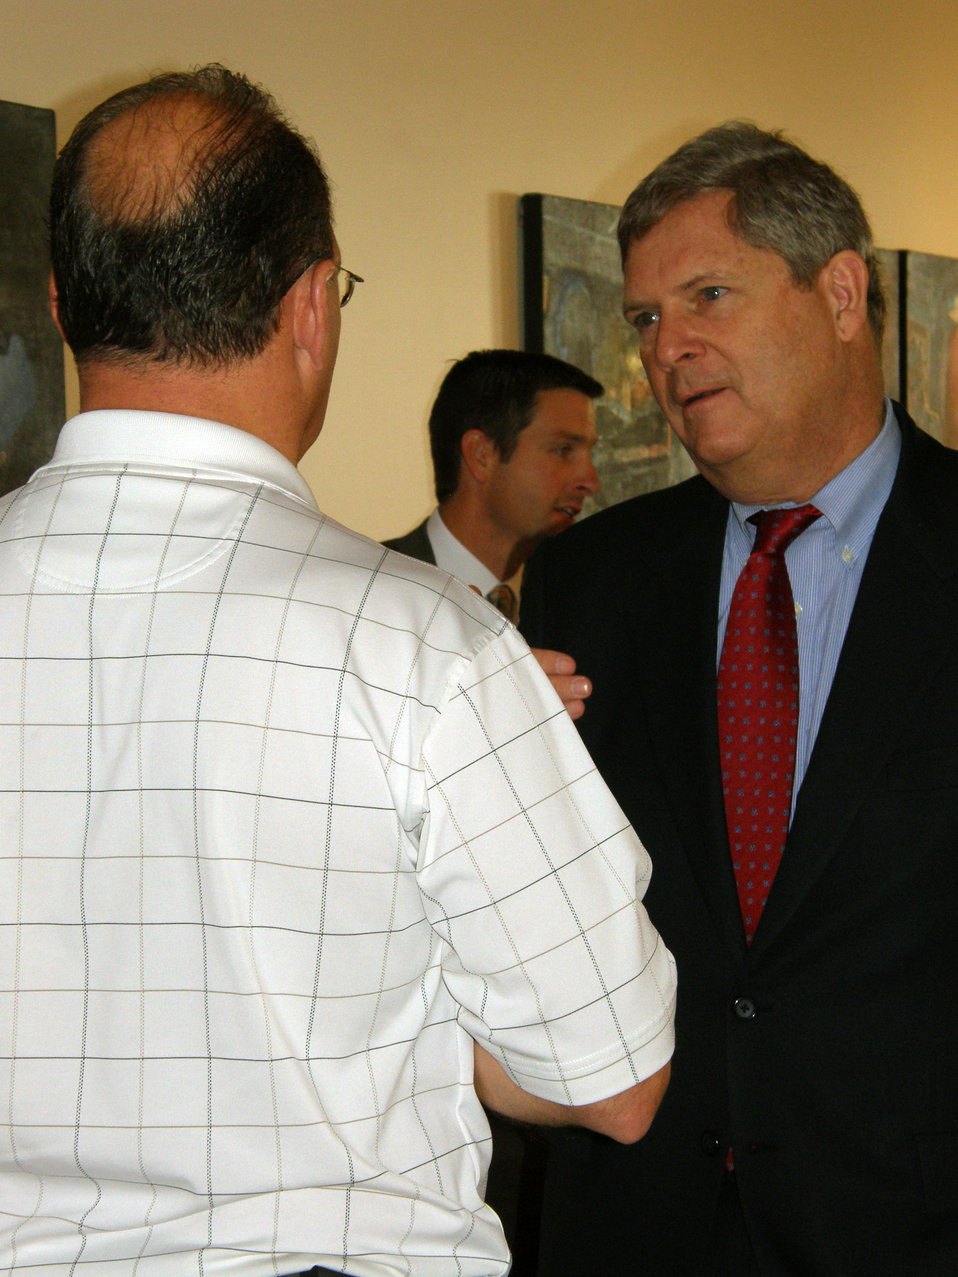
Agriculture Secretary Tom Vilsack talks with Cedar Rapids, IA, Mayor Ron Corbett in Cedar Rapids, IA, on Saturday, October 8, 2011. Secretary Vilsack is in Iowa to promote President Obama's American Jobs Act and trade agreements.